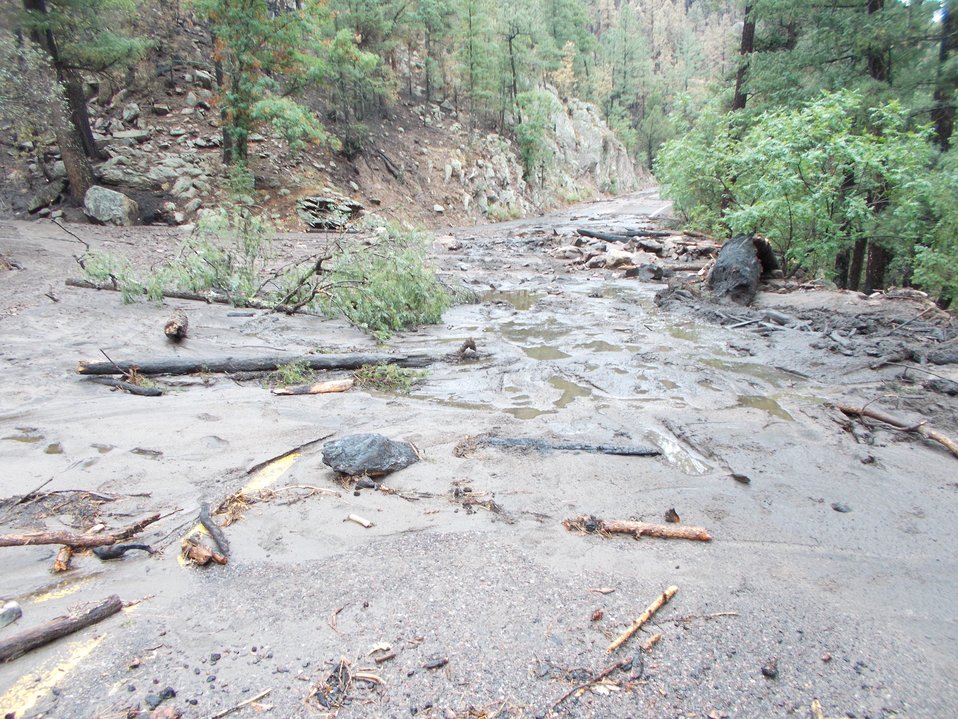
Debris is brought down to NM Hwy 152 after a thunderstorm due to the Silver Fire near Kingston, NM. The Silver Fire in Gila National Forest near Kingston, NM began on Jun. 7, 2013 by a lightning strike, has burned an estimated 138,705 acres and is 85% contained.